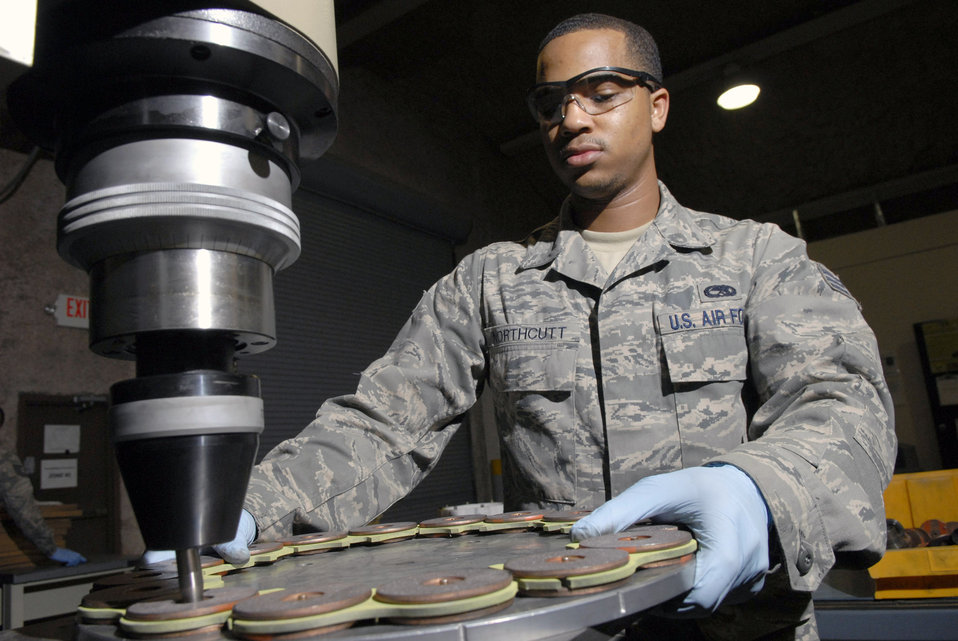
Take a brake

Senior Airman Joseph Northcutt assembles the lining for a KC-135 Stratotanker steel brake assembly April 17 at an air base in Southwest Asia. Airman Northcutt is a hydraulics journeyman with the 379th Expeditionary Maintenance Squadron, and is from Los Angeles.